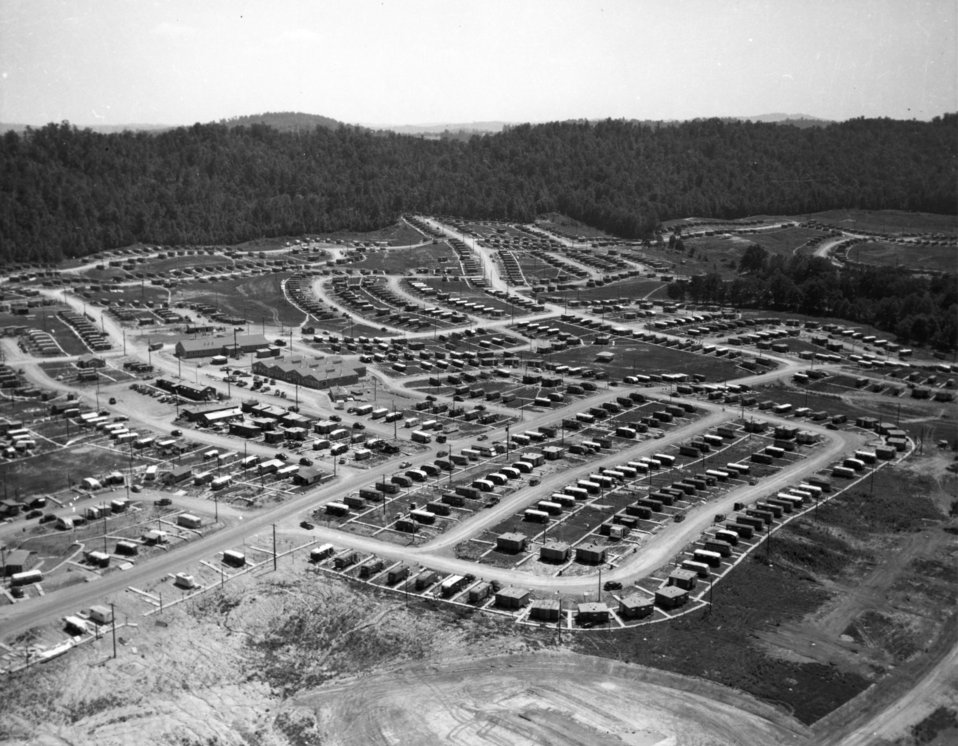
Aerial of Oak Ridge